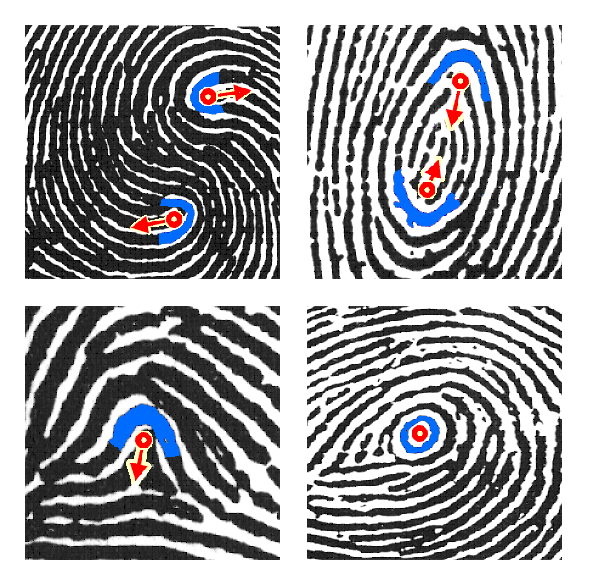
Fingerprints

These examples of the new standards Extended Features Set show forensic scientists how to mark core locations (clockwise from from top left) for a double loop whorl, plain whorl, central pocket loop whorl and tented arch.